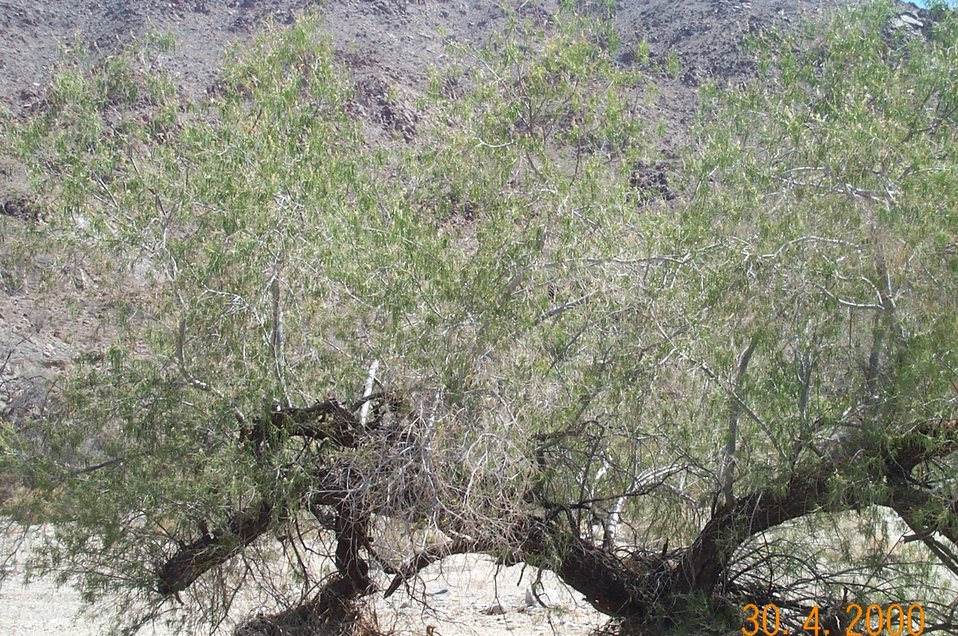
Desert vegetation (desert willow)